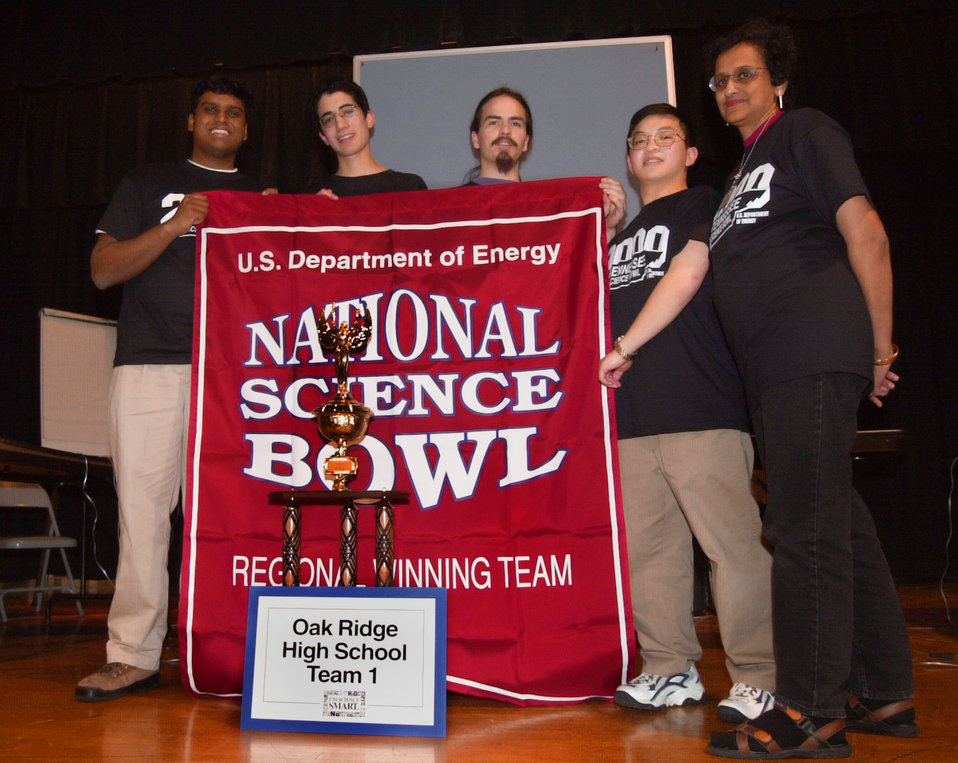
DOE Science Bowl Pellissippi State Winning Team Oak Ridge High School

00-0020-098 DOE photo by Lynn Freeny

DOE Science Bowl Pellissippi State Winning Team Oak Ridge High School Maryville Tennessee Feb. 2000